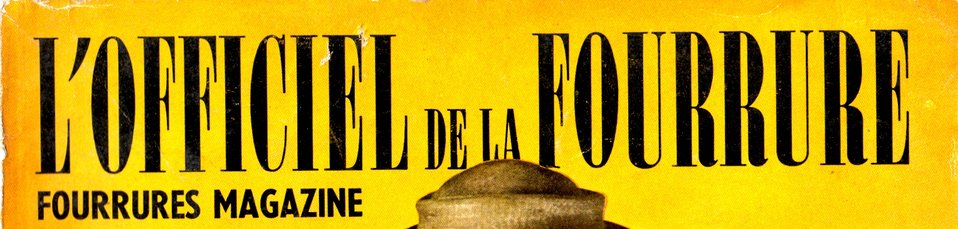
Deutsch: Titel einer französischen Fachzeitschrift für die Rauchwarenbranche aus dem Jahr 1986. L'Officiel de la Fourrure. Fourrures magazin. N° 2, 1954 13, Rue d'Enghien, Paris (X°) Directeur: Marcel Lhopiteau Prix 3500 Fr. 74 Seiten, 21,5 x 28,5 cm Title of the front-page of a French fur trade journal